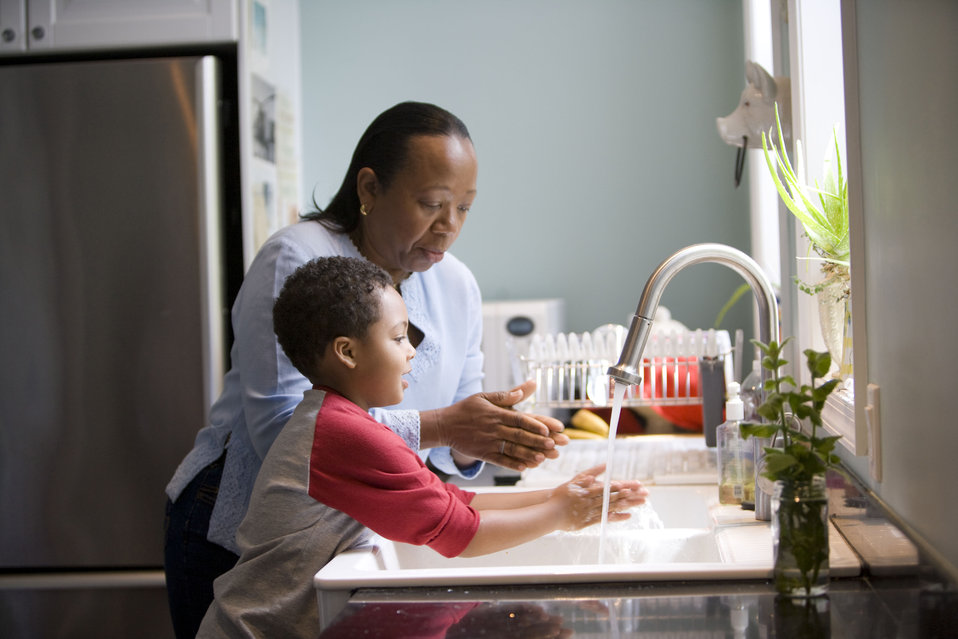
This African-American mother was shown in the process of teaching her young son how to properly wash his hands at their kitchen sink, briskly rubbing his soapy hands together under fresh running tap water, in order to remove germs, and contaminants, thereby, reducing the spread of pathogens, and the ingestion of environmental chemicals or toxins. Children are taught to recite the Happy Birthday song, during hand washing, allotting enough time to completely clean their hands.